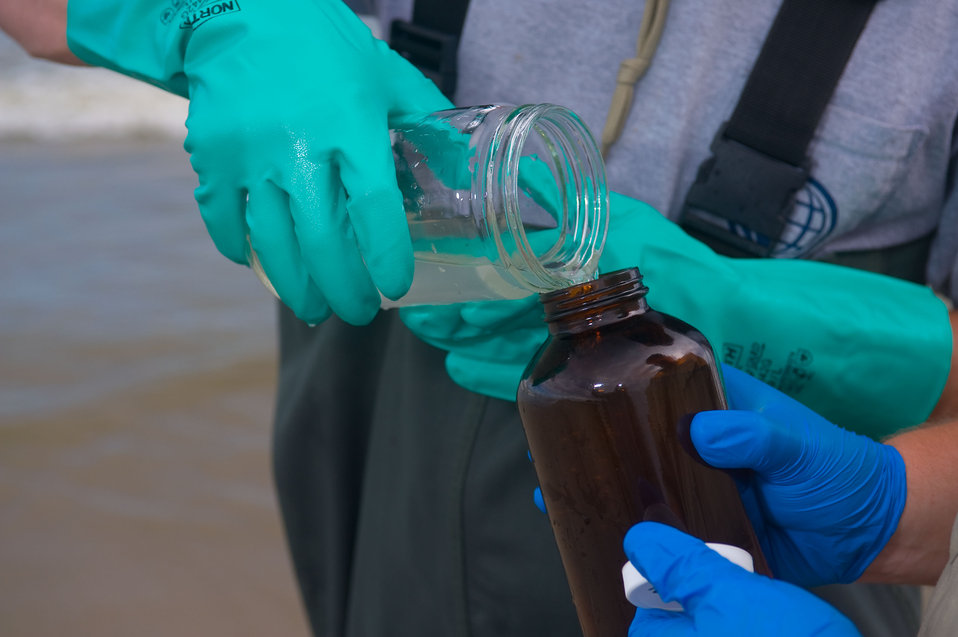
June 4, Collecting a snapshot of coastal water quality in Louisiana

Coastal water sample decanted into amber bottle.